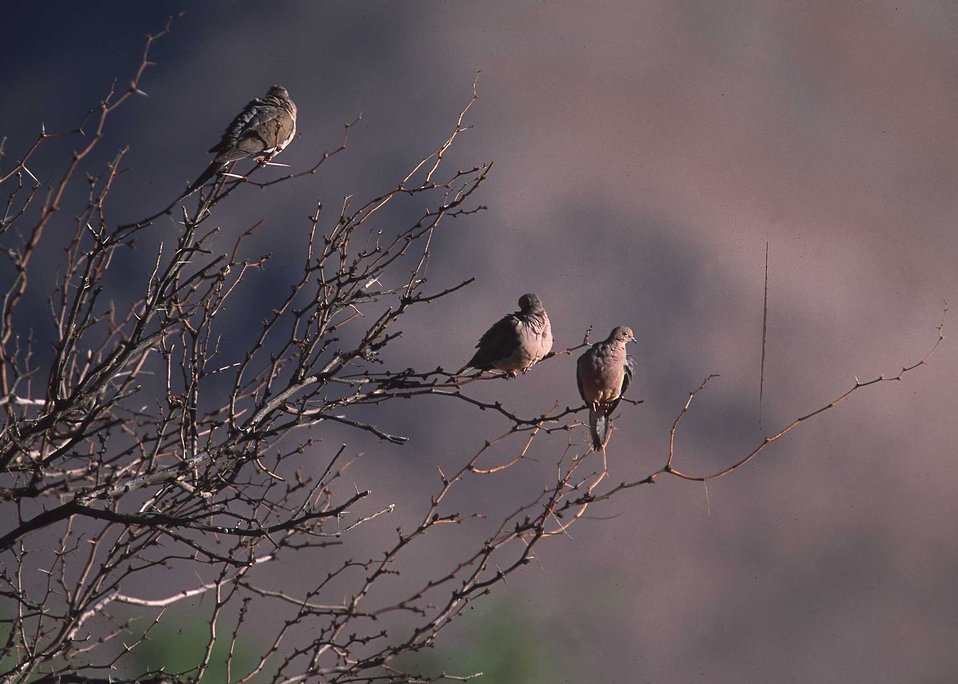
Mourning doves.